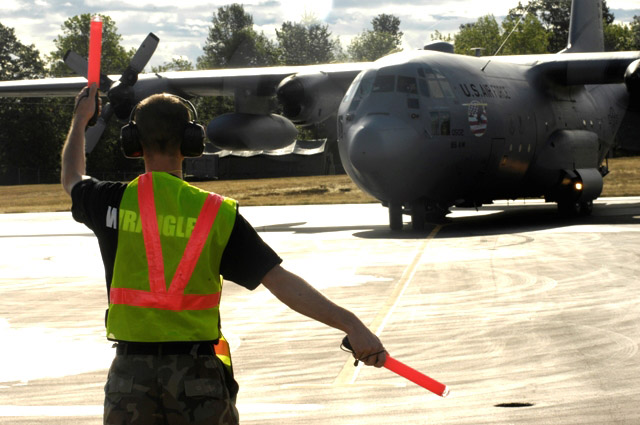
Planners keep Rodeo 2007 aircraft flying

Senior Airman Christian Recene marshals a C-130 Hercules from Ramstein Air Base, Germany, during its July 21 arrival to McChord Air Force Base, Wash. Rodeo 2007, hosted by Air Mobility Command, is an airlift competition of U.S. and international air mobility forces.